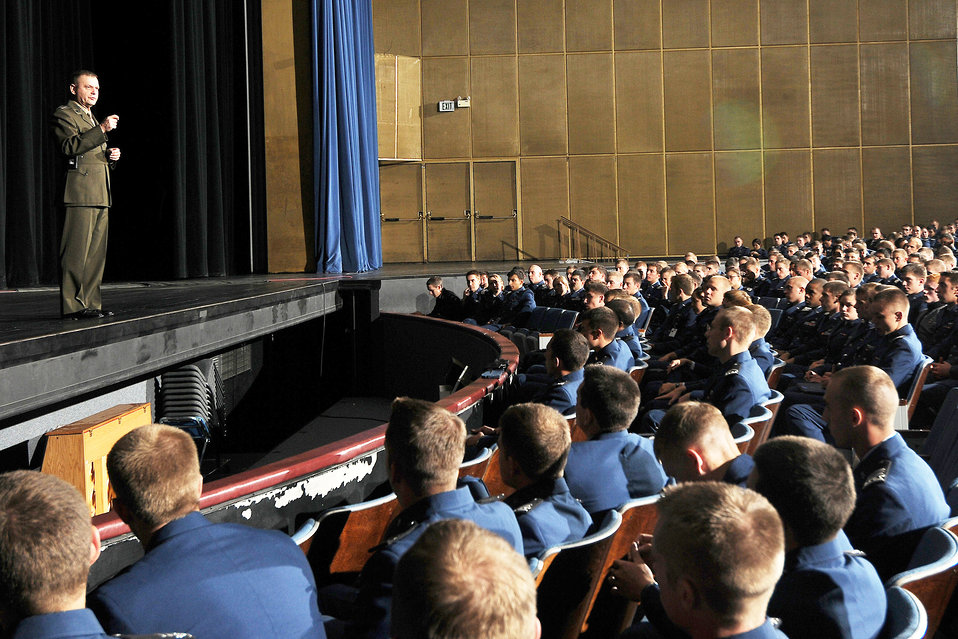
Academy Assembly guests discuss bridging war, peace

Marine Gen. James Cartwright speaks to U.S. Air Force Academy cadets during the 2009 Academy Assembly Oct. 8, 2009 at the Academy's Arnold Hall Theater in Colorado Springs, Colo. General Cartwright is the vice chairman of the Joint Chiefs of Staff.